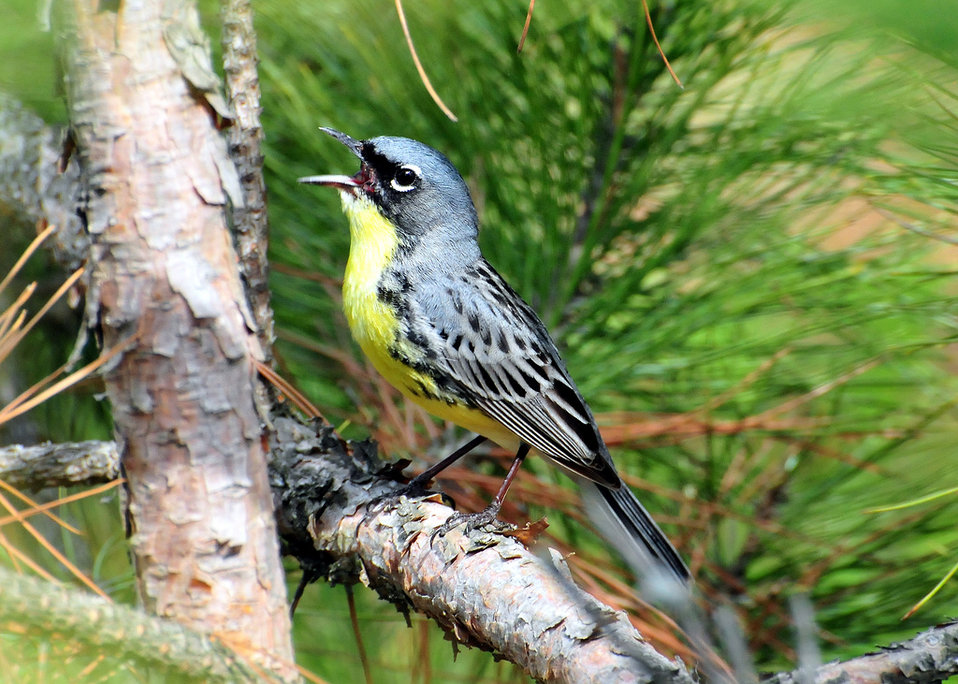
Endangered Kirtland's warbler (Dendroica kirtlandii)

Learn about the historical importance of fire in managing healthy jack pine forests in Michigan, which the endangered Kirtland’s warbler depends: www.fws.gov/endangered/news/episodes/bu-10-2011/kirtlands...